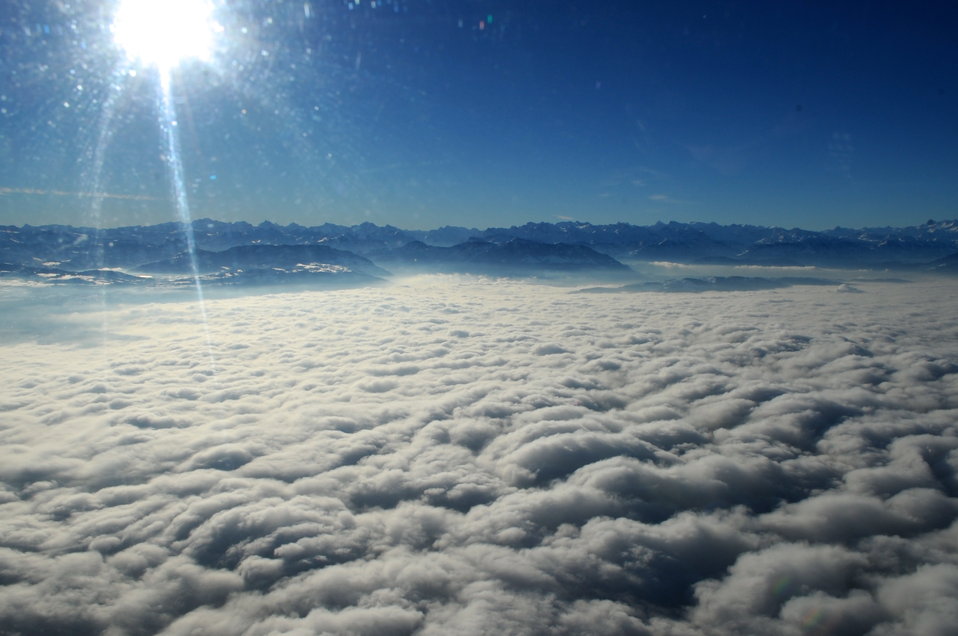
Cloud Blanket between Davos and Zurich

A blanket of clouds cover the terrain leading up to a section of Swiss Alps, as seen from the helicopter carrying U.S. Secretary of State John Kerry as he flew between Davos, Switzerland, and Zurich on Jan. 25, 2014. [State Dept. Photo/Public Domain]